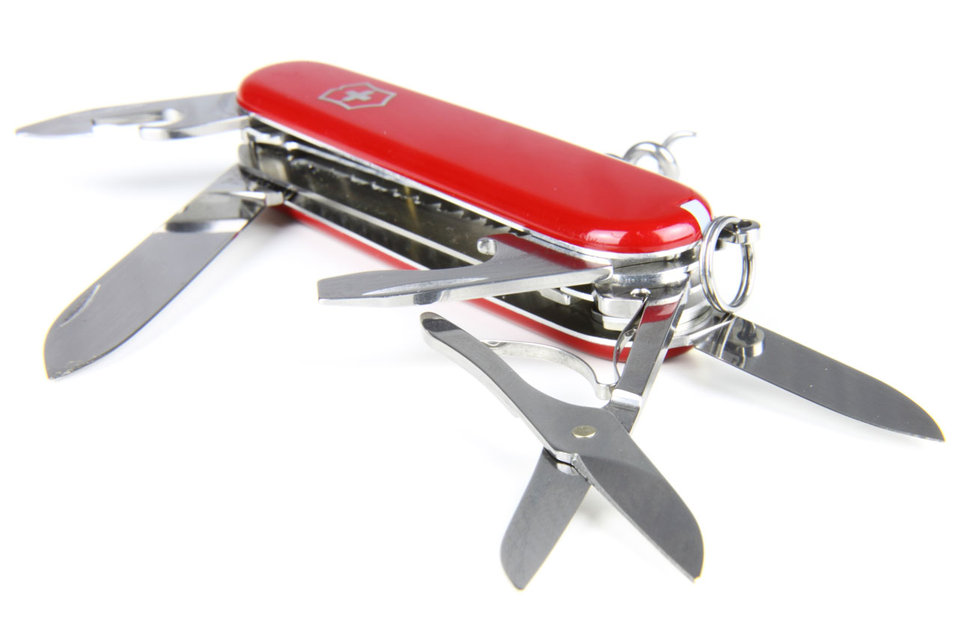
Swiss army knife

Opened swiss army knife.